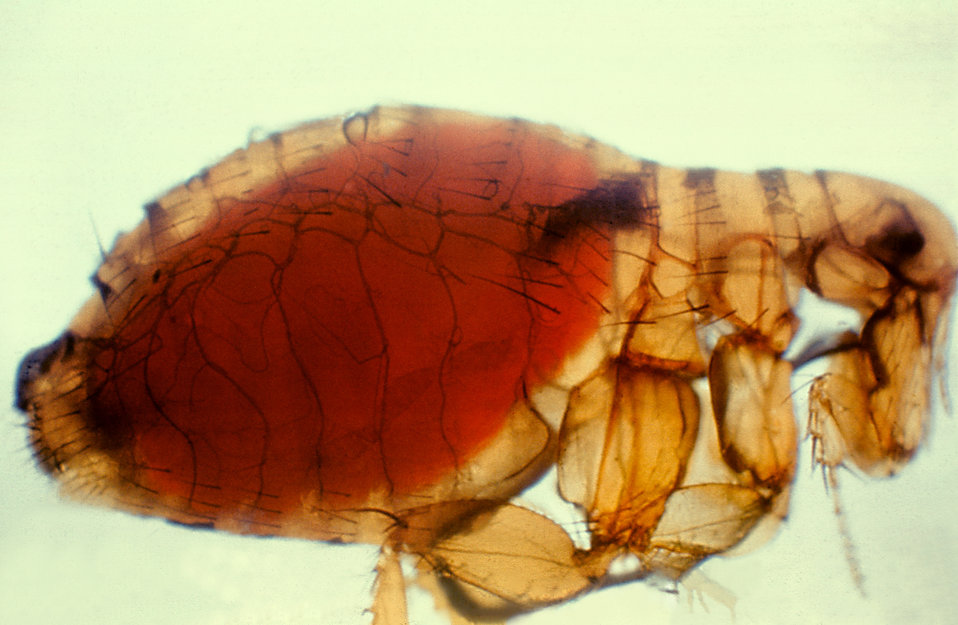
Xenopsylla cheopis, Oriental rat flea, with a proventricular plague mass.